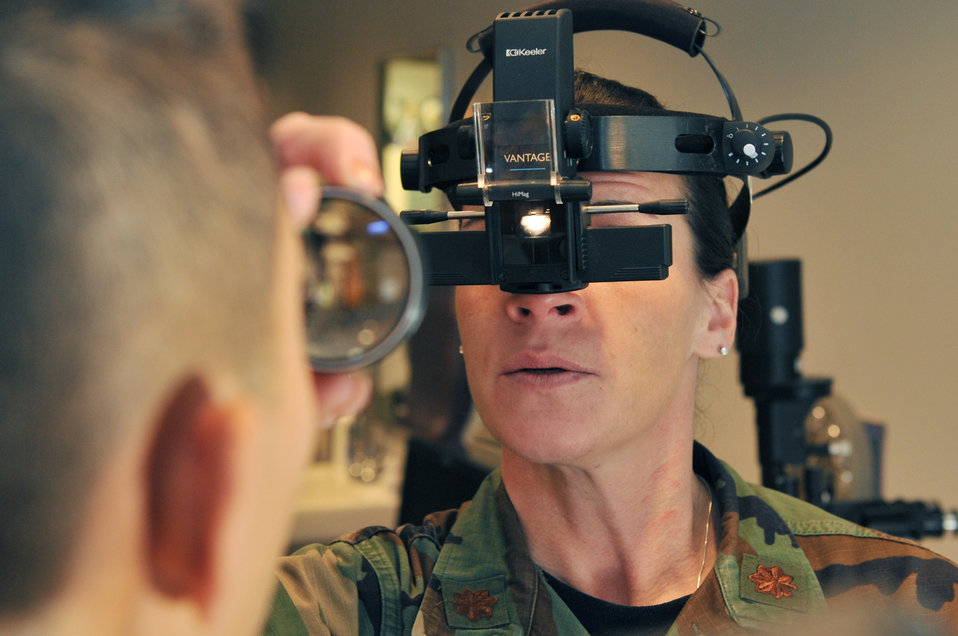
The eyes have it

Maj. (Dr.) Patricia Hoogeveen checks a patient's retinas as part of a routine eye exam Feb. 8, 2011, at Little Rock Air Force Base, Ark. Dr. Hoogeveen is the 19th Aerospace Medical Squadron optometry flight commander.